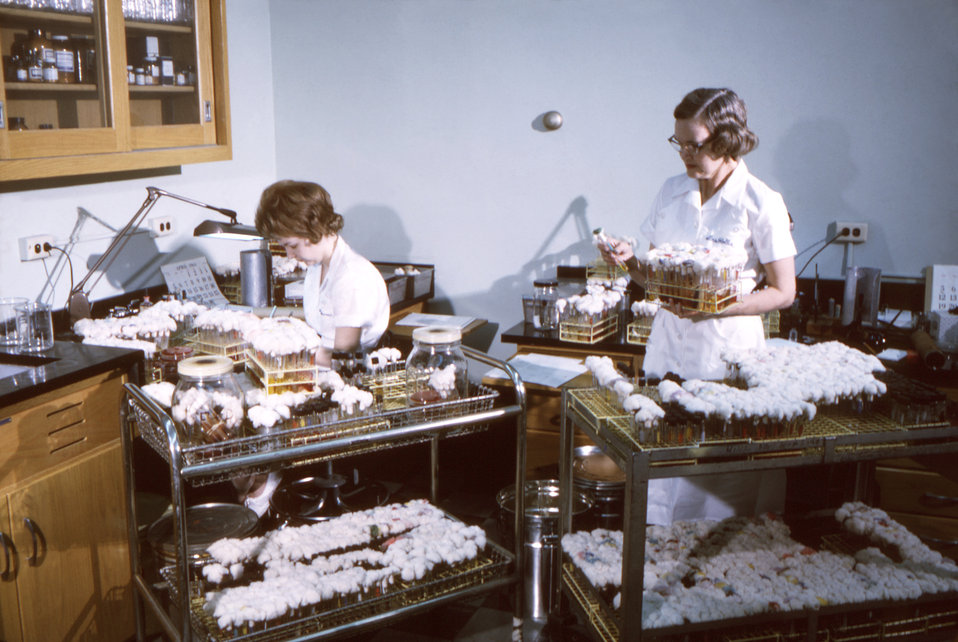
This historic 1964 photograph depicted two laboratory technicians, as they were in the process of performing a bacteriologic culture analysis.